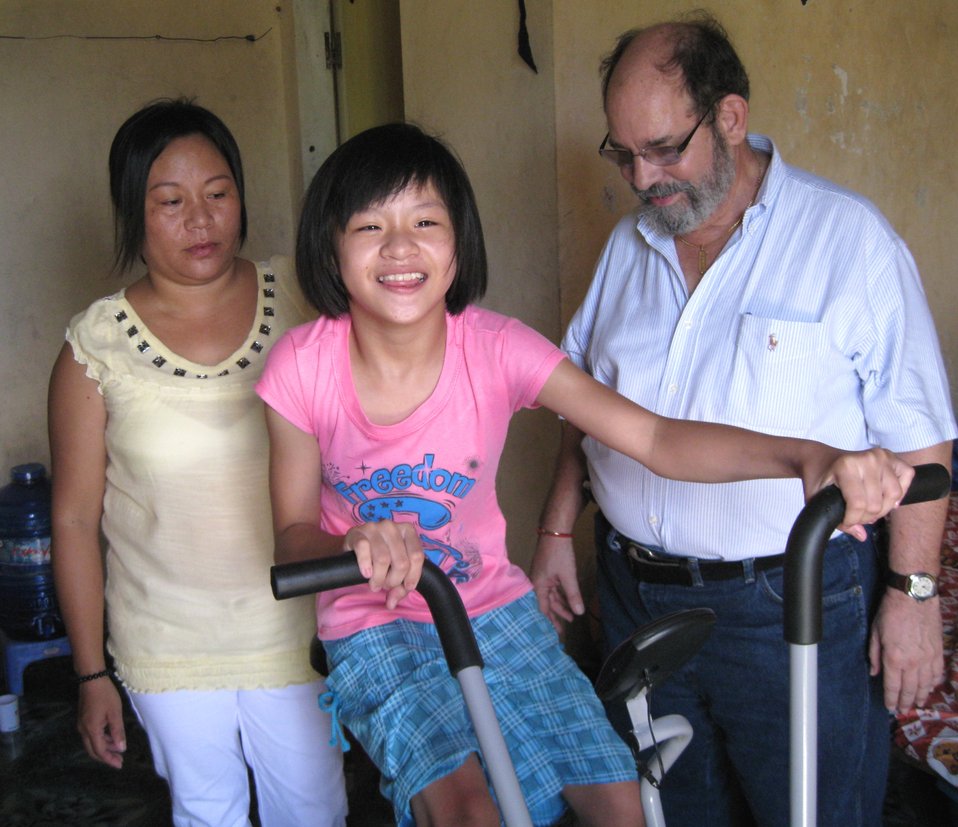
USAID supports rehabilitation for persons with disabilities in Danang.

Danang, June 10, 2013.